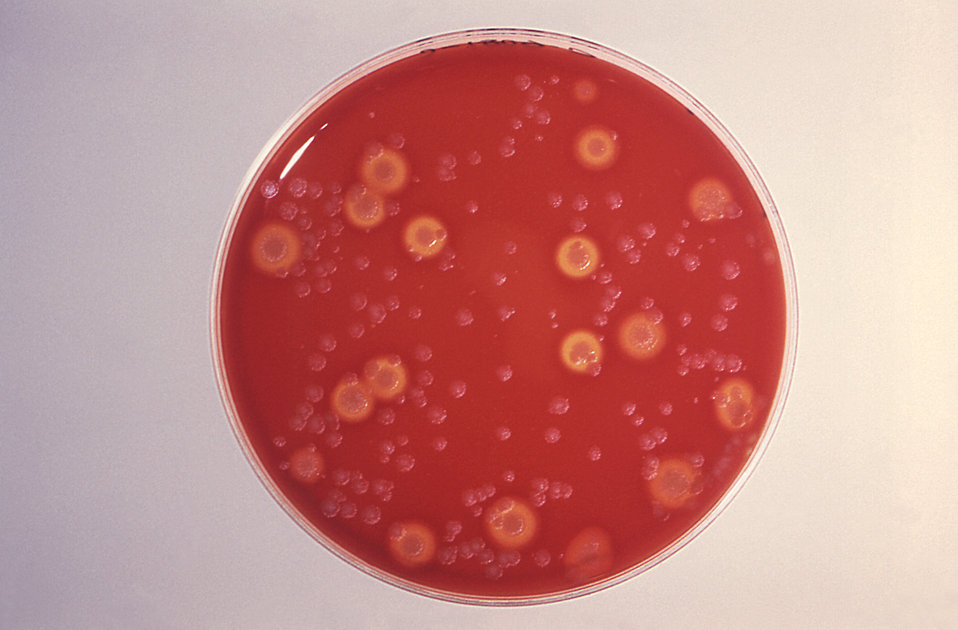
This was a blood agar culture plate growing B. anthracis and other soil flora.